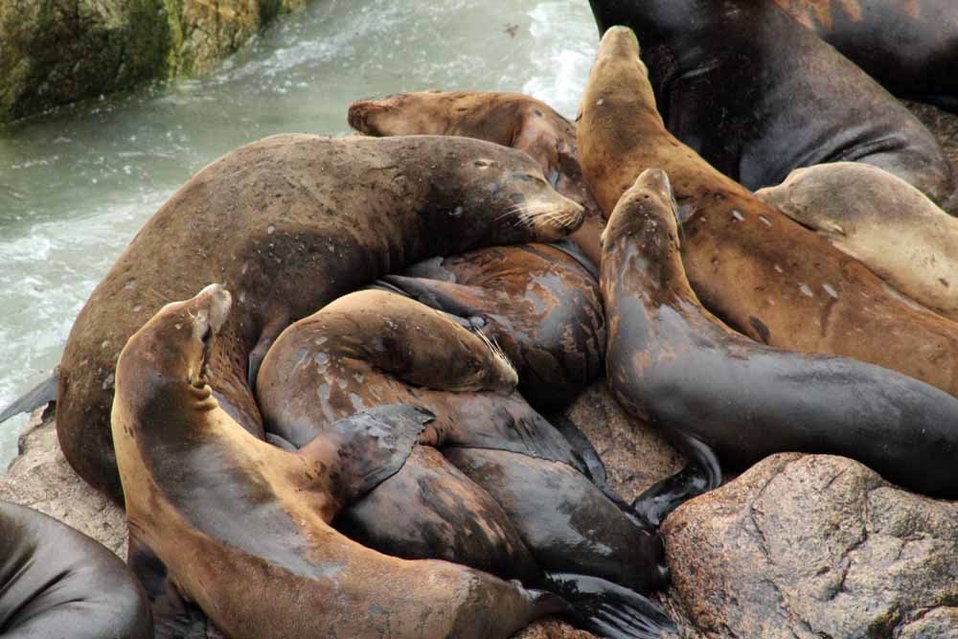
California sea lions

Farallon National Wildlife Refuge, CA